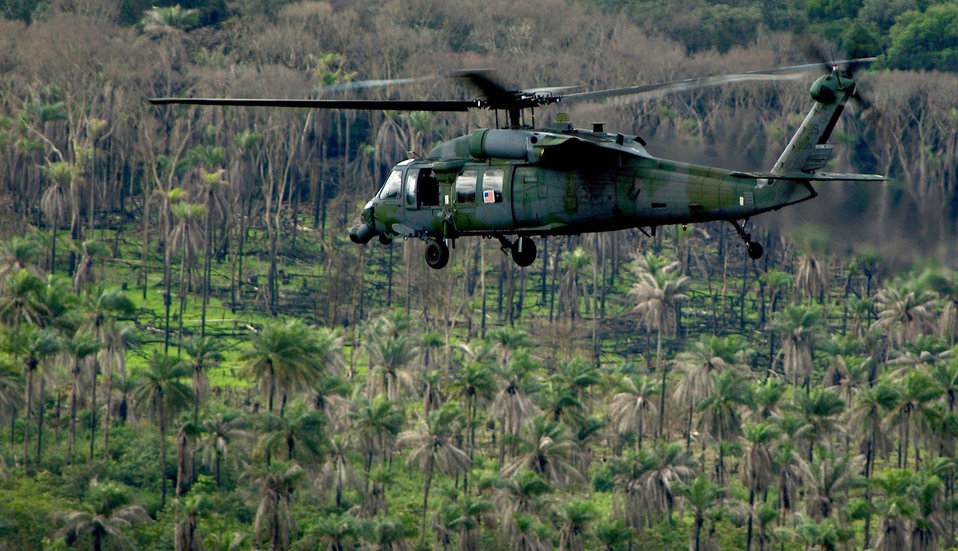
Going home

OVER WEST AFRICA -- An HH-60G Pave Hawk helicopter from the 56th Rescue Squadron, Naval Air Station Keflavik, Iceland, flies back to Sierra Leone after a evacuation mission into the U.S. Embassy in Liberia, July 28. The 398th Air Expeditionary Group is currently in Sierra Leone to provide personnel recovery and emergency evacuation capability for the Humanitarian Assistance Survey Team and the Fleet Anti-terrorism Security Team in Liberia.